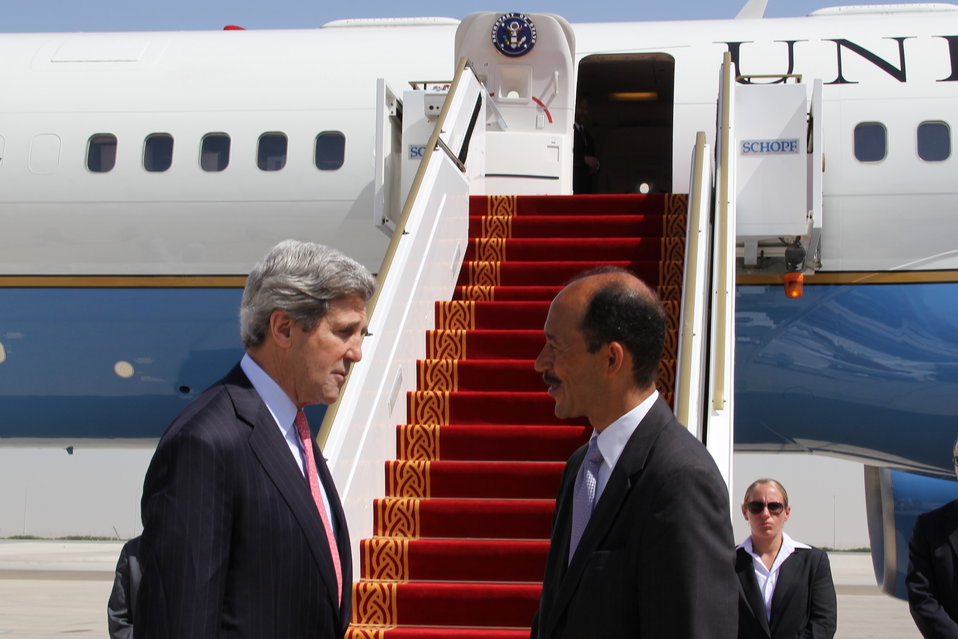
Ambassador Corbin Bids Farewell to Secretary Kerry

U.S. Secretary of State John Kerry and U.S. Ambassador to the United Arab Emirates Michael Corbin share a moment prior to the Secretary's departure from Abu Dhabi, United Arab Emirates, on March 5, 2013.